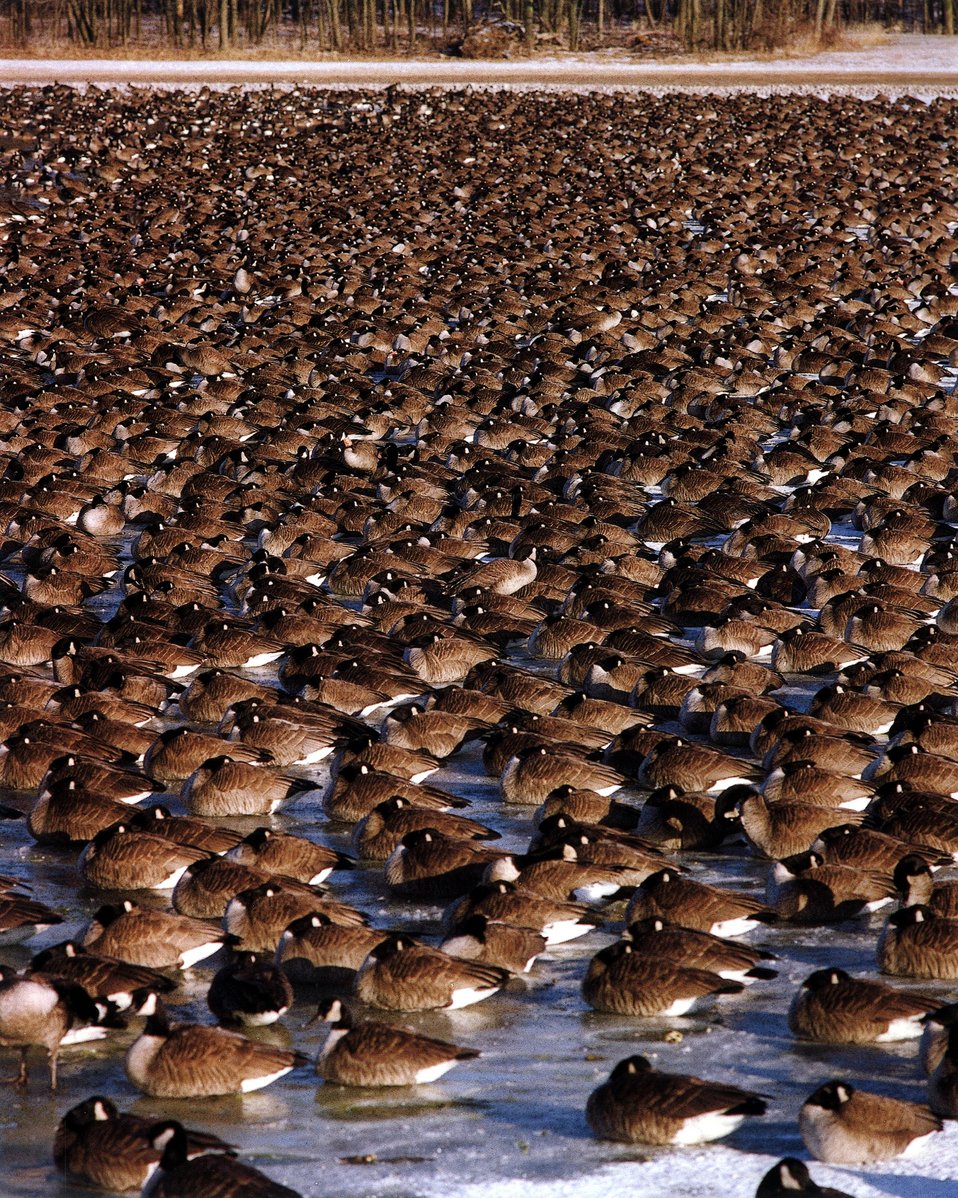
FLOCKS OF CANADA GEESE AT FERMI LAB.

DURING THE HEIGHT OF THE MIGRATION SEASON THERE CAN BE FROM 15,000 TO 18,000 CANADA GEESE AT THE FERMILAB SITE. THE LARGE AREAS OF WARM WATER, ABUNDANT FORAGE AND OPEN SPACES MAKE THE SITE AN IDEAL HAVEN FOR GEESE DURING THE WINTER.